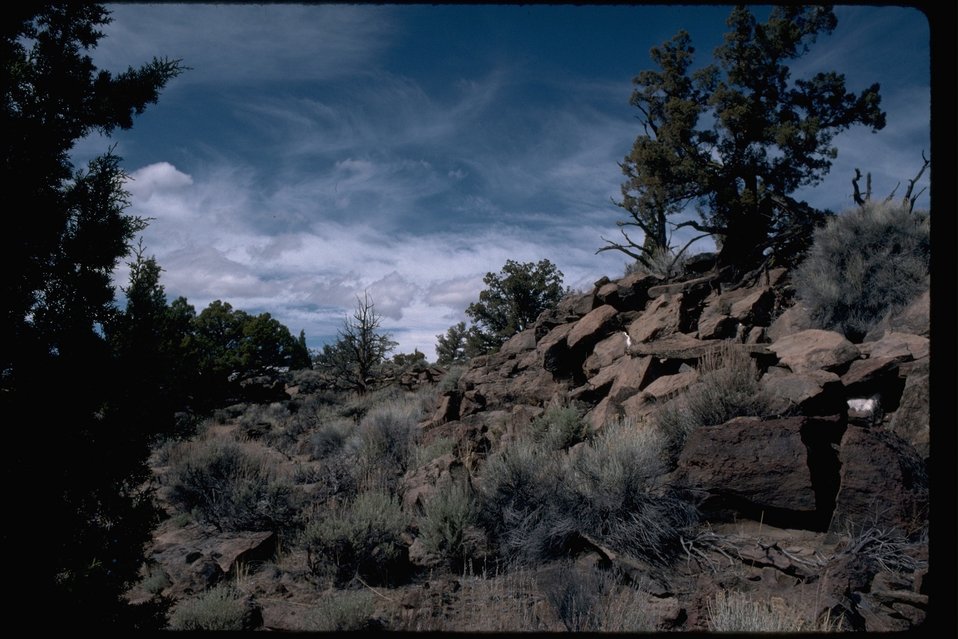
The lava beds in the Badlands Wilderness Study Area. OR 5-21